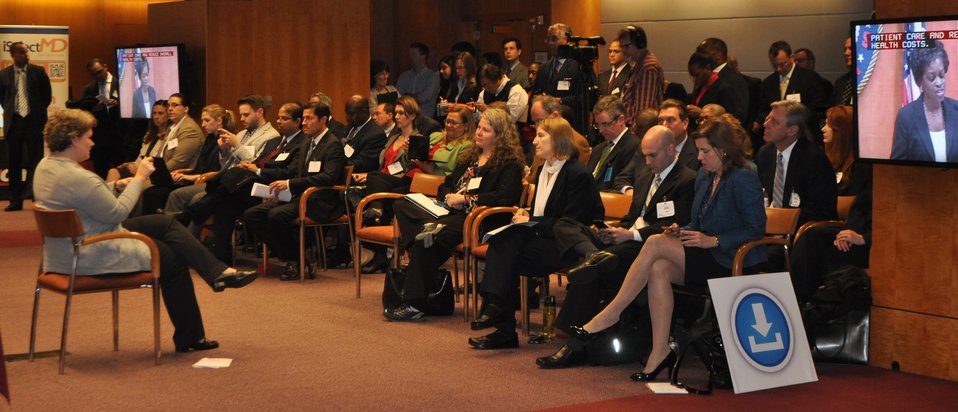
12.6.13 mHealth Innovation Expo

FCC mHealth Innovation Expo